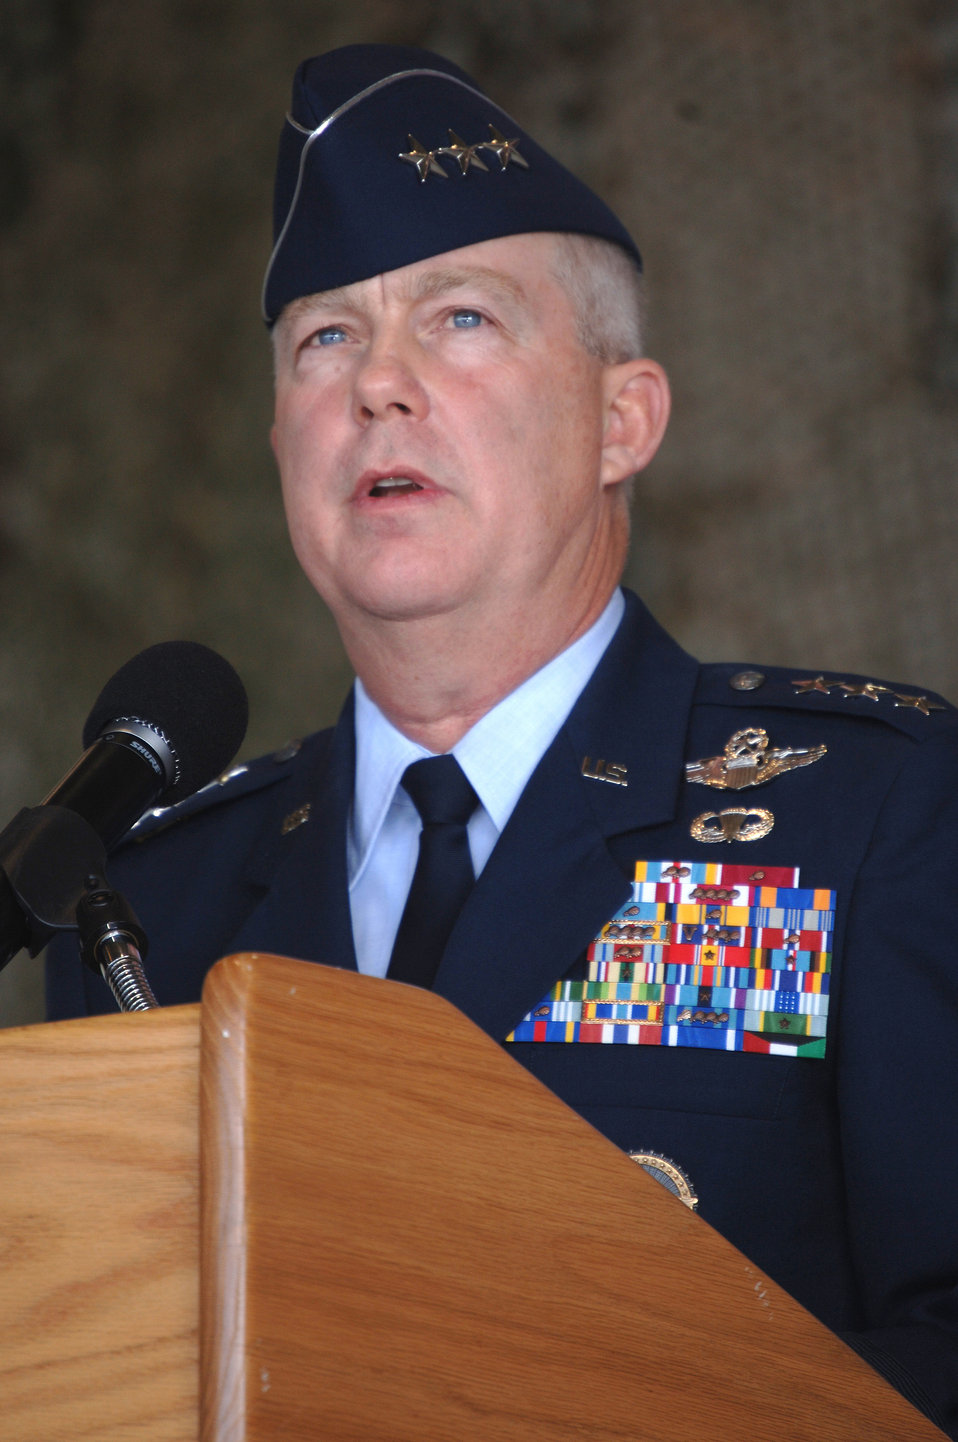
AFSOC welcomes new commander

Air Force Special Operations Command Commander Lt. Gen. Donnie Wurster addresses more than 1,000 Airmen and guests during the AFSOC change of command ceremony Nov. 27 at Hurlburt Field, Fla.